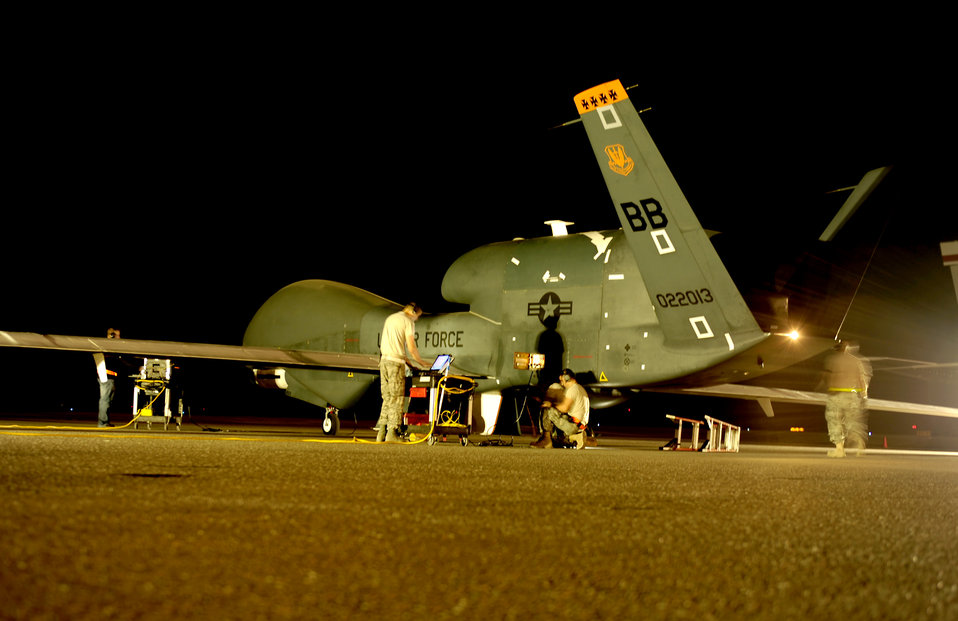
Global Hawk prepares for flying mission

Maintenance technicians go over pre-flight inspections on their RQ-4 Global Hawk aircraft before a mission while deployed Nov. 23, 2010, at an air base in Southwest Asia. The Airmen are assigned to the 380th Expeditionary Aircraft Maintenance Squadron.